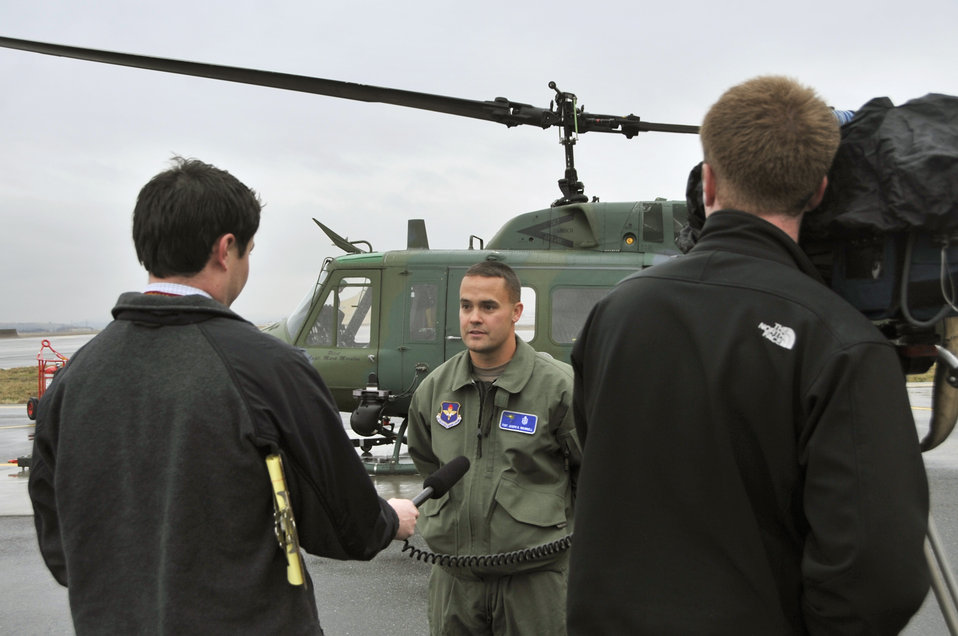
Fairchild rescue crew

Media members interview Tech. Sgt. Joseph Brownell in front of a UH-1N Iroquois helicopter Oct. 28, 2010, at Fairchild Air Force Base, Wash. Sergeant Brownell, a medic with the 36th Rescue Flight, was one of five crew members who rescued six people that day.